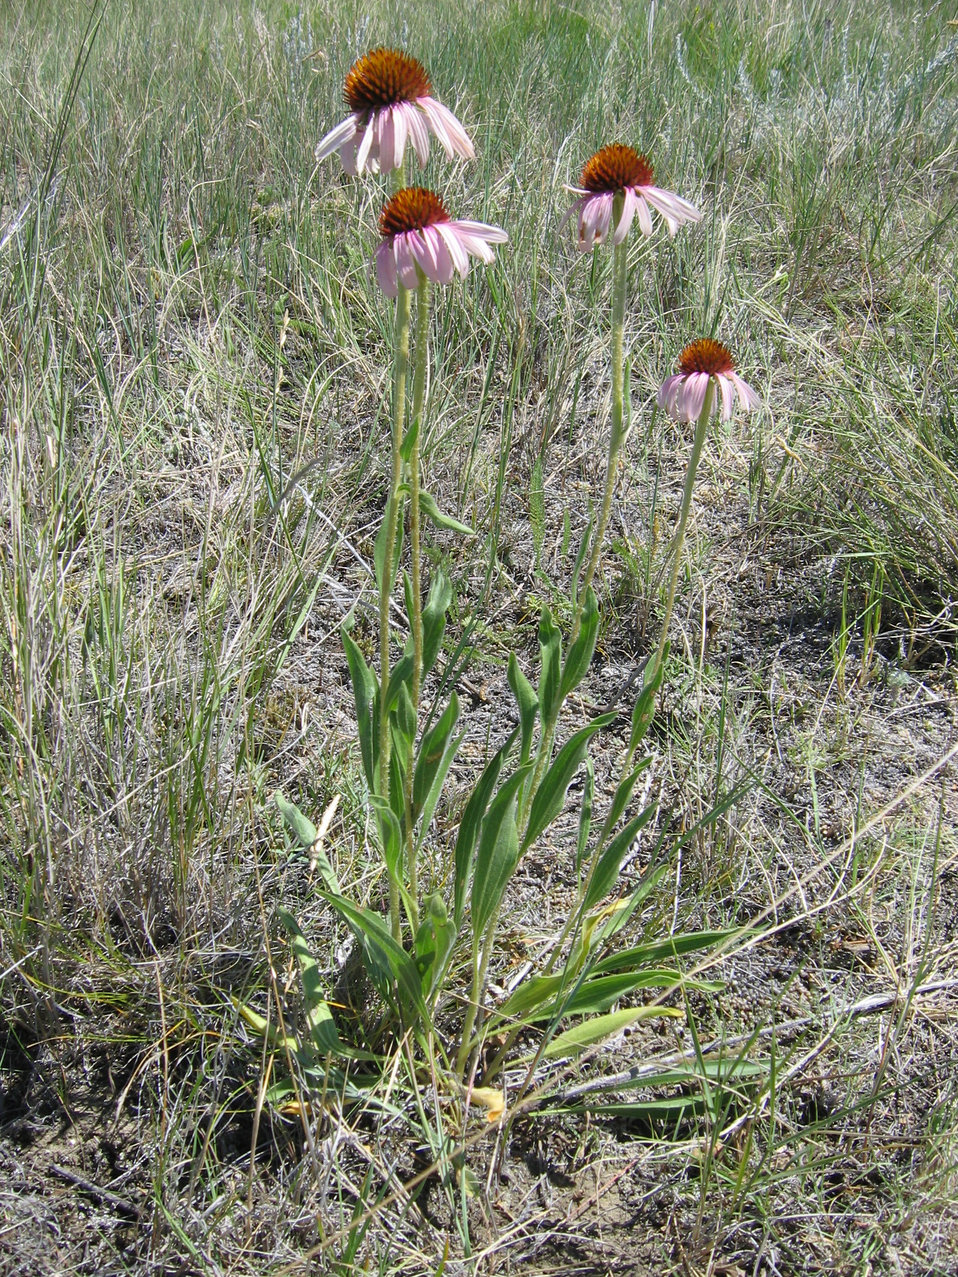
Purple coneflower is an indicator of a healthy prairie and was used medicinally by Native Americans for everything from stings to arthritis.